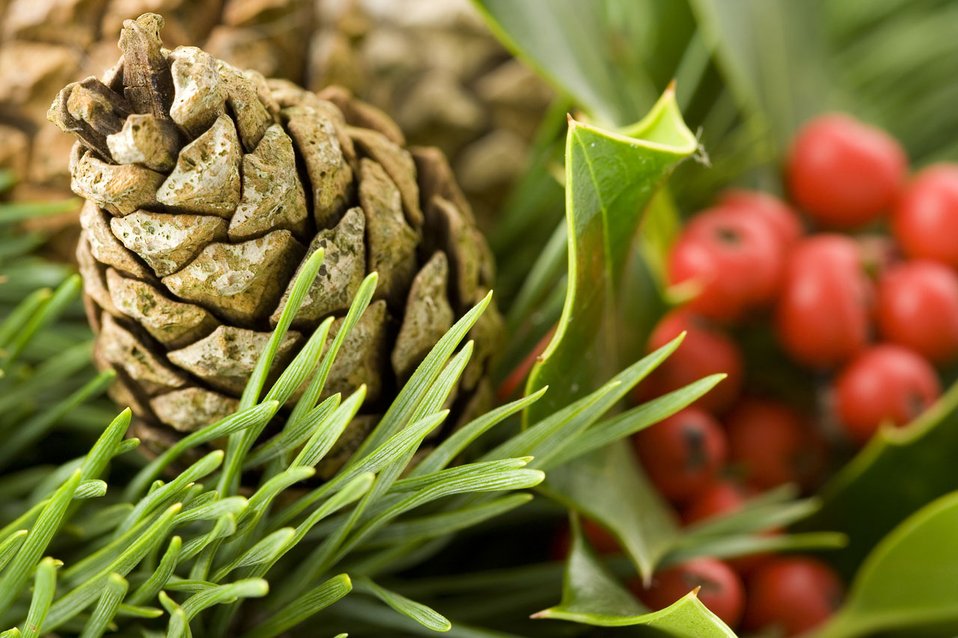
Cone on advent wreath

Macro photo of cone on advent wreath.